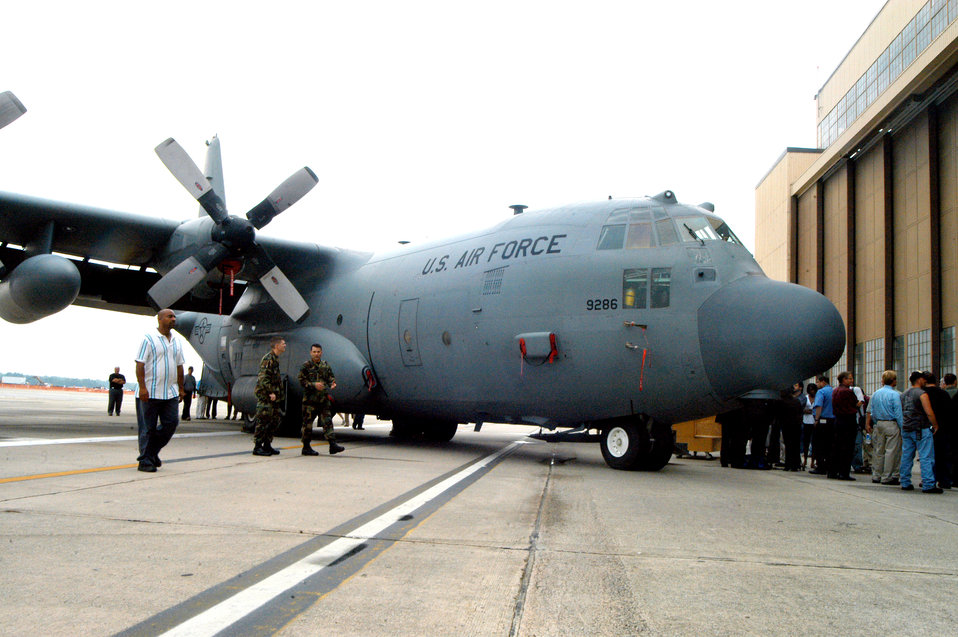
Highly modified C-130 ready for war on terrorism

The first-of-its-kind MC-130W was presented to Air Force Special Operations Command in a ceremony at Robins Air Force Base, Ga., on Wednesday, June 28. The highly modified C-130 will replace special operations aircraft lost in combat.